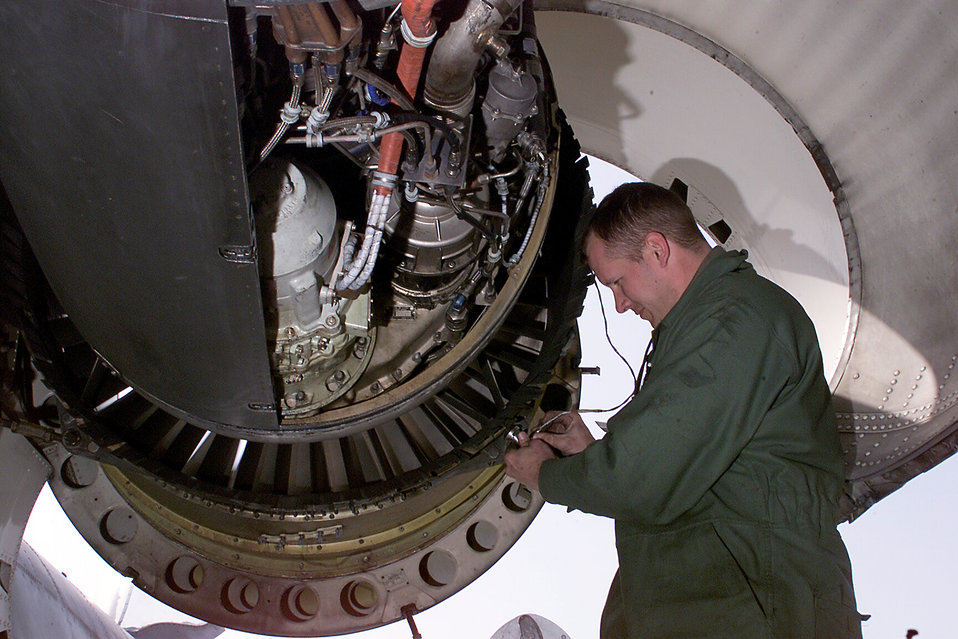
PBS hook up

OSAN AIR BASE, South Korea -- Staff Sgt. Samuel Kauth hooks up a portable balancing system on an A-10 Thunderbolt II jet engine March 31 to monitor vibrations on the engine. Sergeant Kauth is an aerospace propulsion craftsman from the 25th Fighter Squadron.